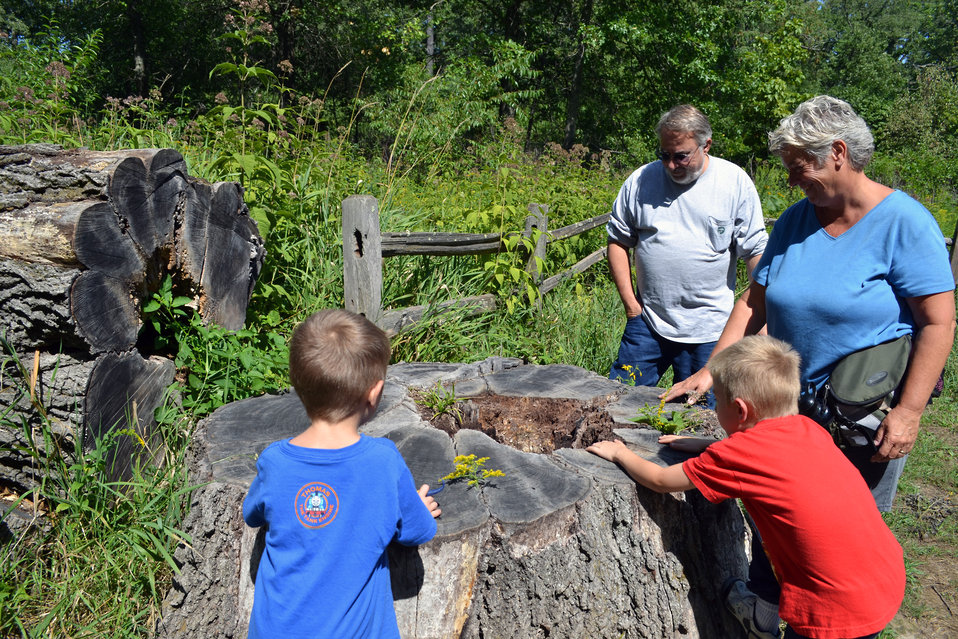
Exploring The Sentinel

McHenry County Conservation District Natural Resource Manager Ed Collins shares the story of The Sentinel, a black oak that lived for more than 300 years.